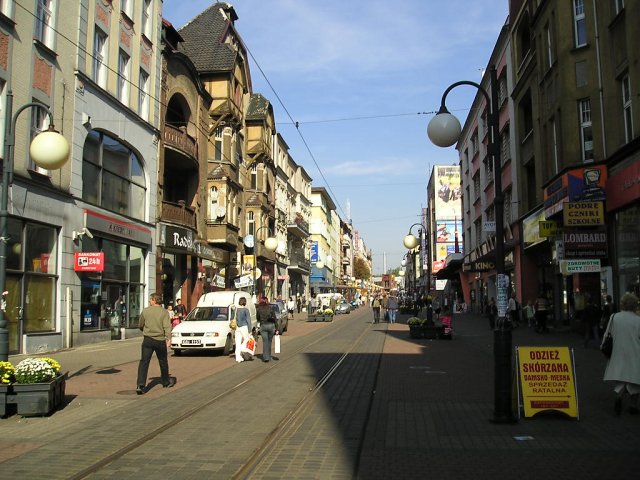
04-wolka-chorzow